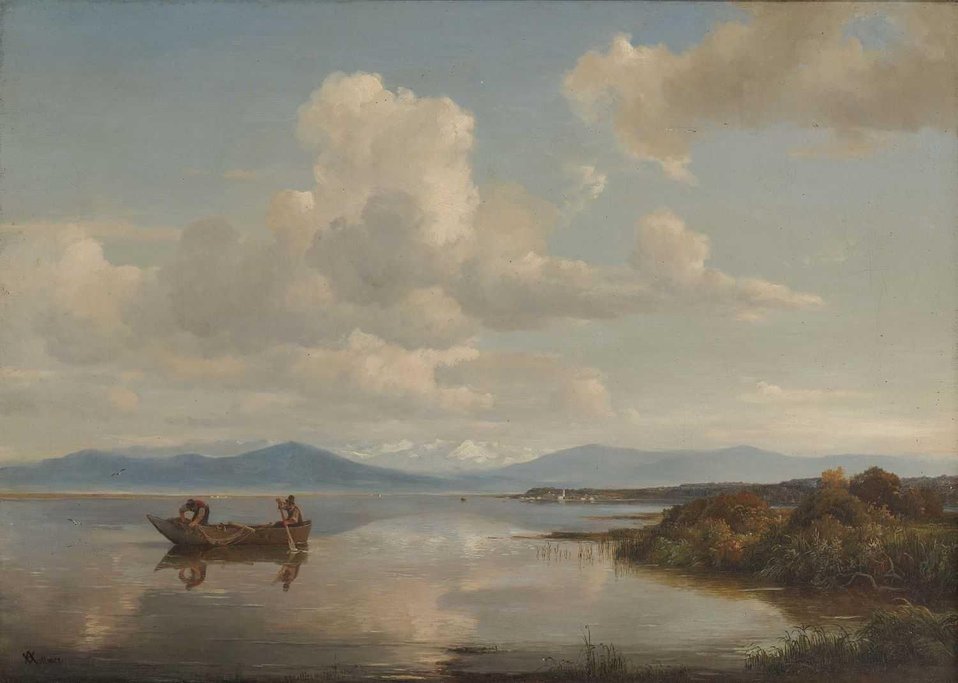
AF Vollmer - Fischer auf dem Chiemsee